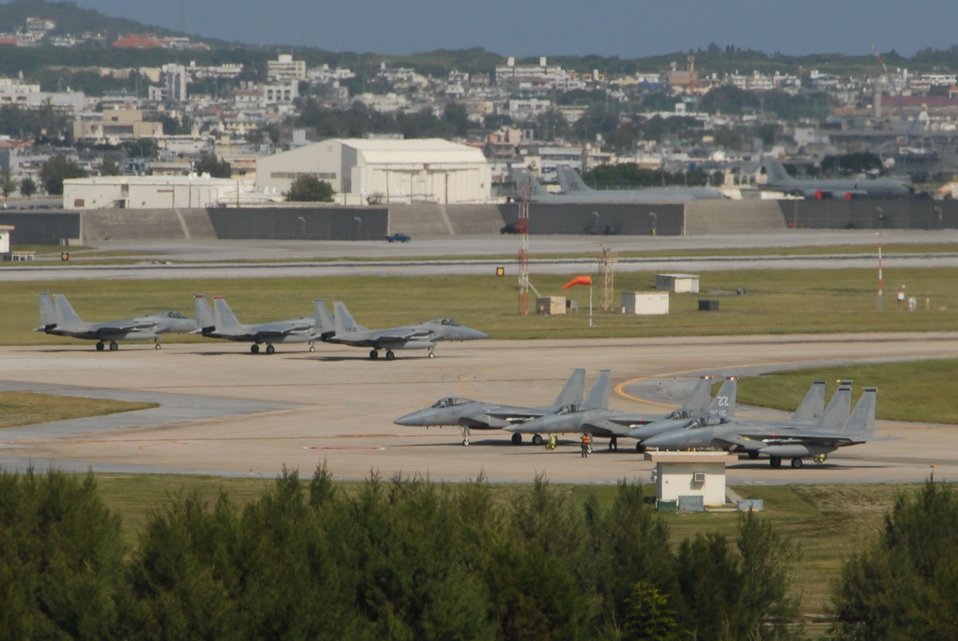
Kadena Eagles ready to leave nest

F-15 Eagles go through missile arming procedures and prepare to take off during a combat capability exercise Oct. 19 at Kadena Air Base, Japan. The 18th Wing exercise from Oct. 13 to 19 tested the wing's ability to respond to a wartime situation.